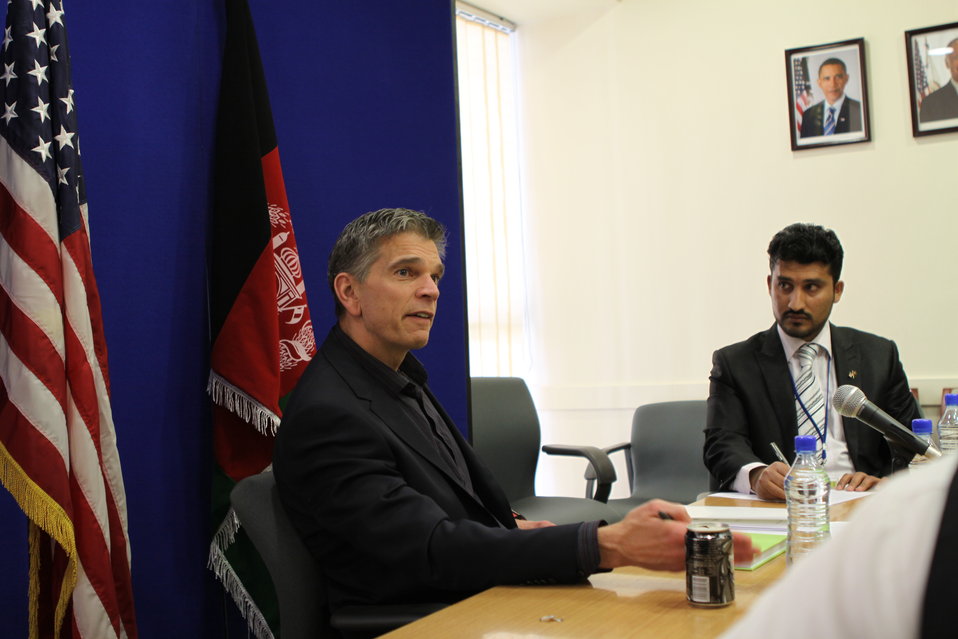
USAID Mission Director Earl Gast Conducts a Media Roundtable with Afghan Media, March 17, 2011